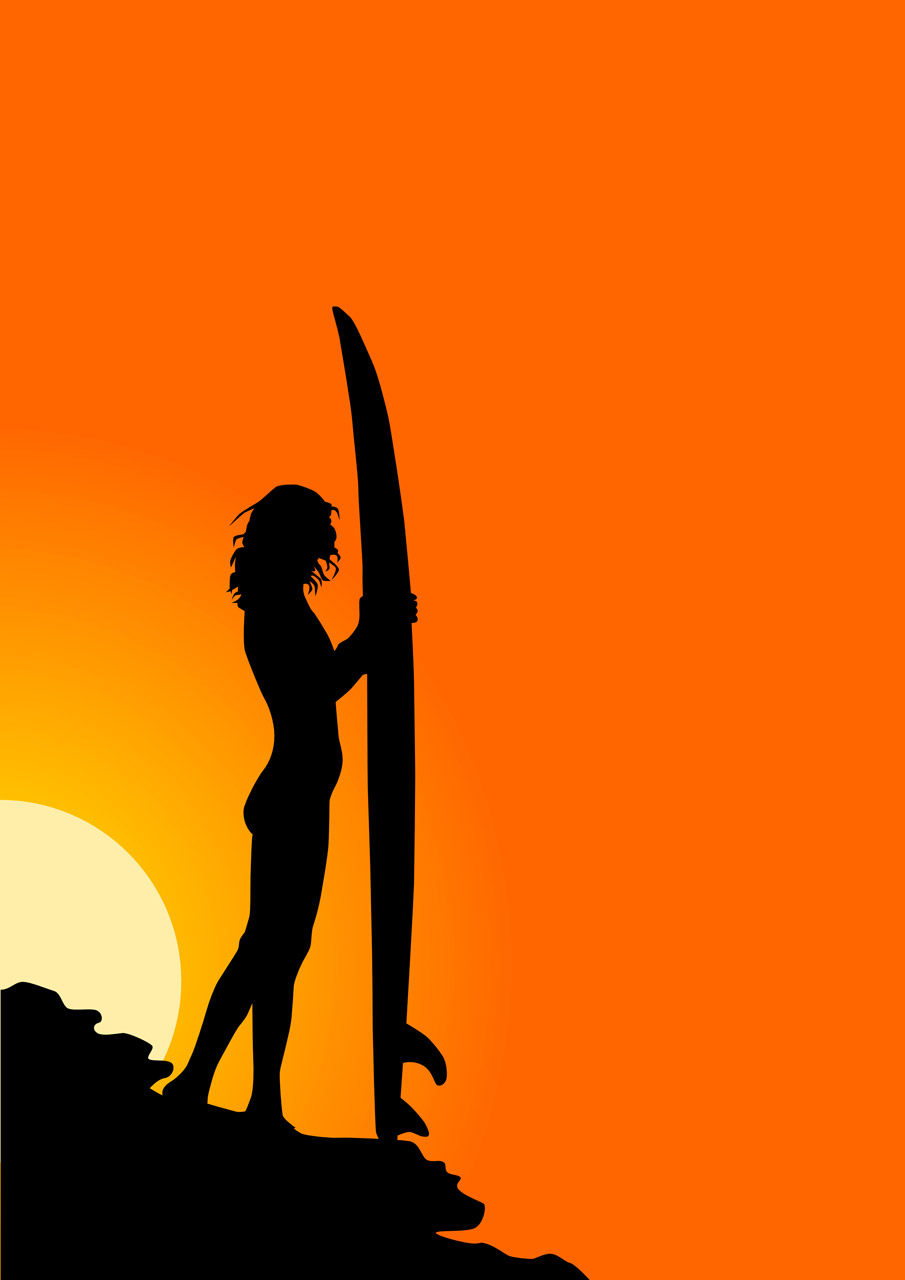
Surfer girl and her surfboard at sunset..